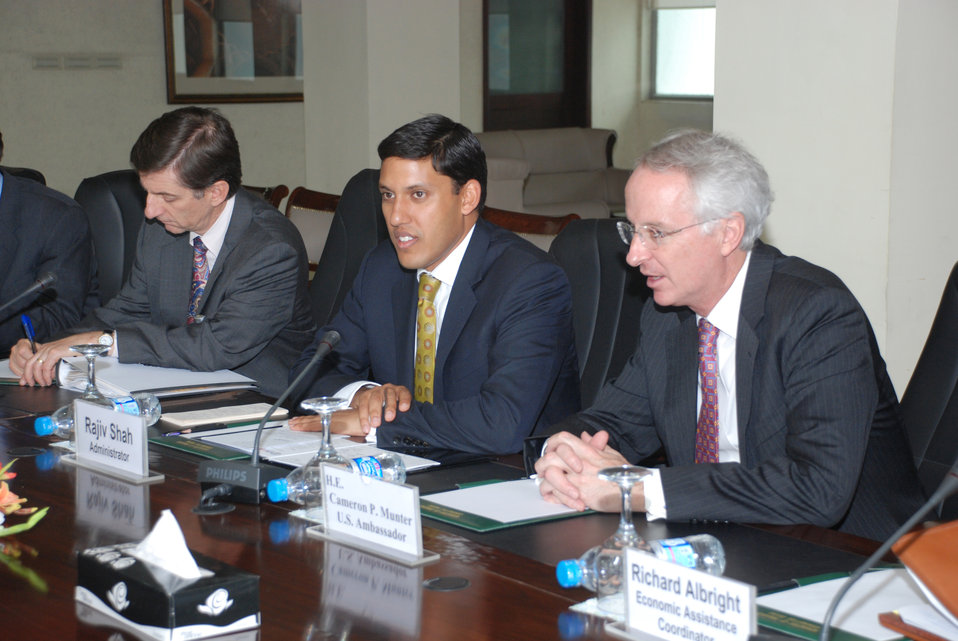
USAID and Pakistan Working Together to Promote Growth, Prosperity at Islamabad on April 13, 2012

Dr. Rajiv Shah, Cameron Munter